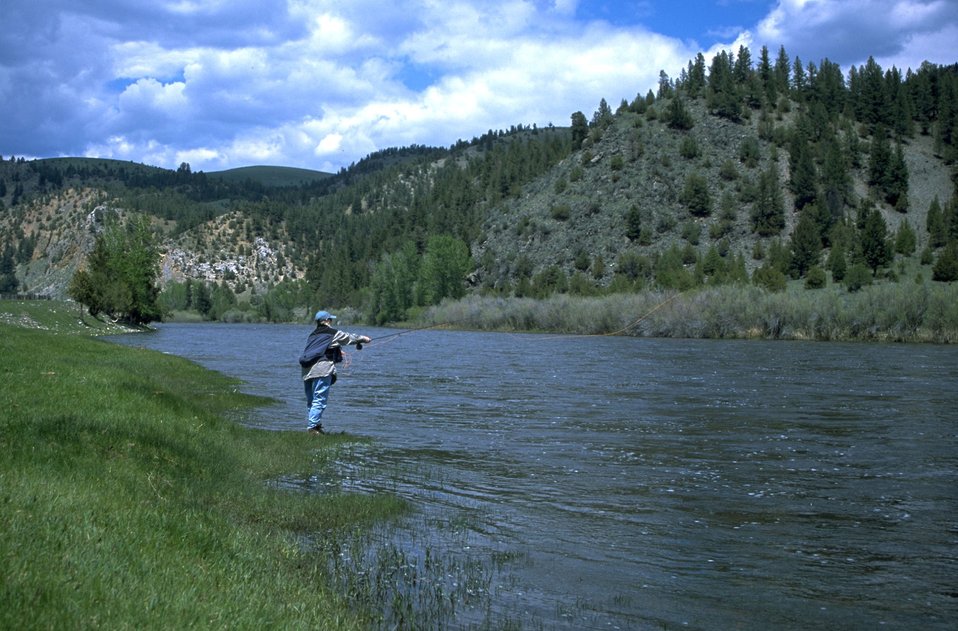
Casting for fish on the Big Hole